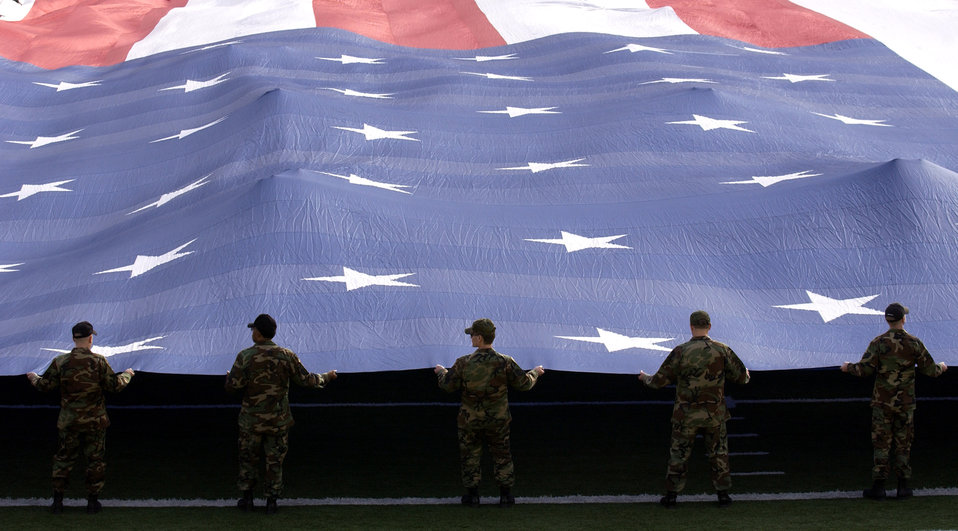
Airmen present flag

Airmen present a 100-yard-by-50-yard American Flag during the National Anthem at the Pioneer PureVision Las Vegas Bowl. The football game featured the Brigham Young University Cougars and the University of Oregon Ducks on Dec. 21 at Sam Boyd Stadium, Las Vegas, Nev. The Cougars beat the Ducks 38-8.